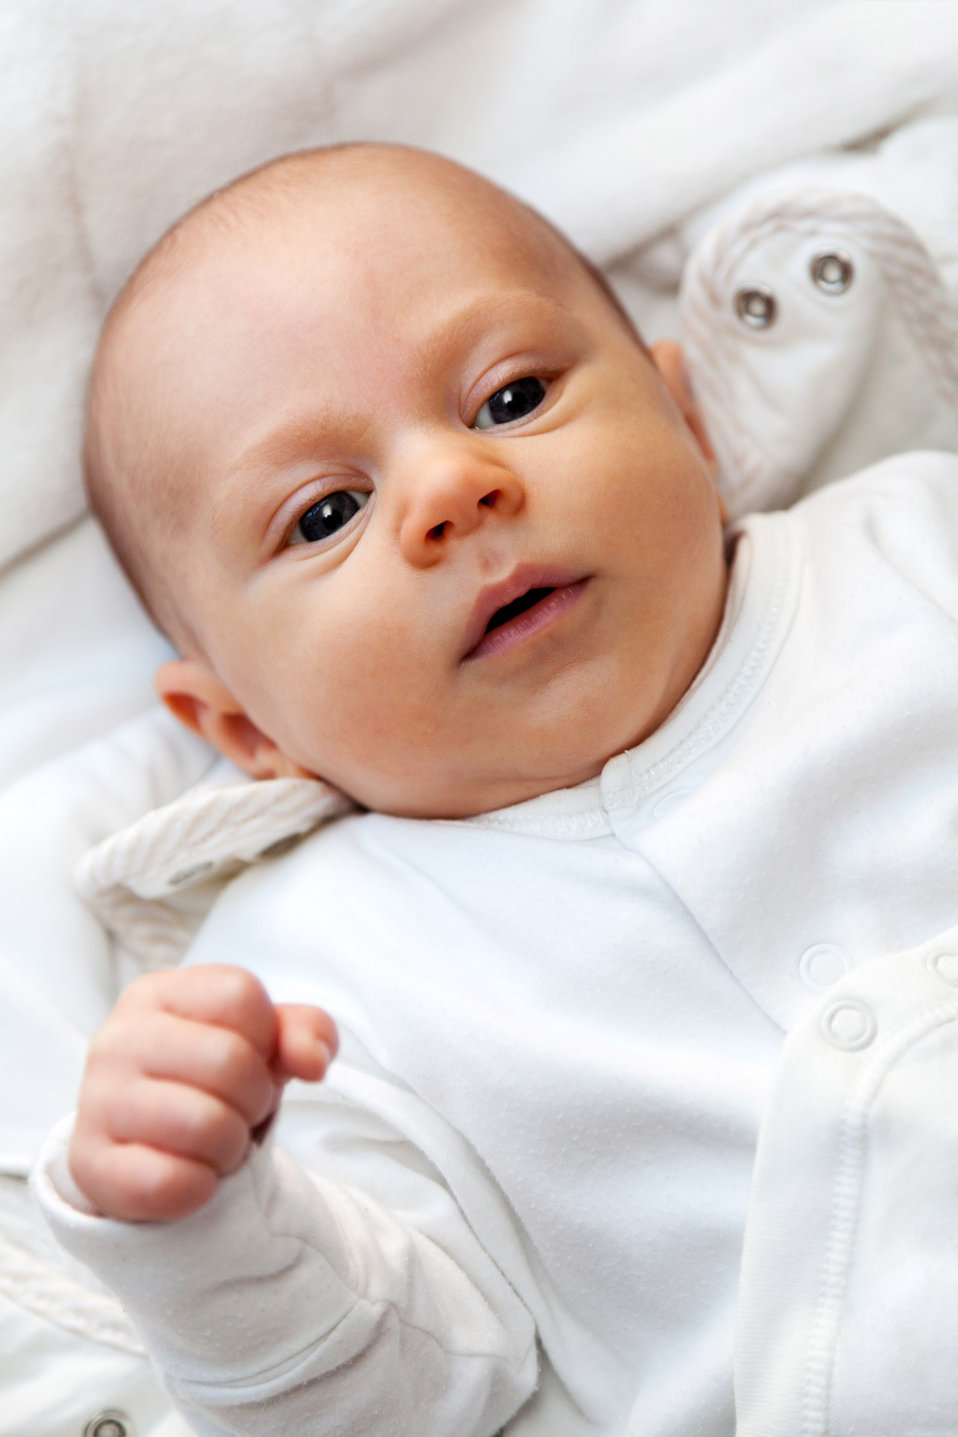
Baby in white

Baby boy in white lying on his back.